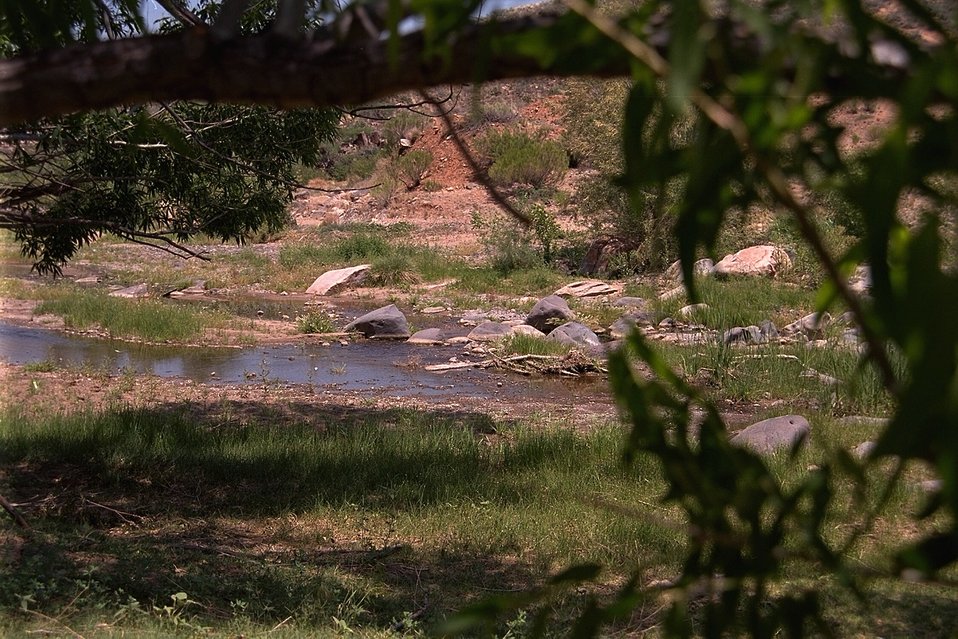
The desert turns a greener shade by the Agua Fria River.